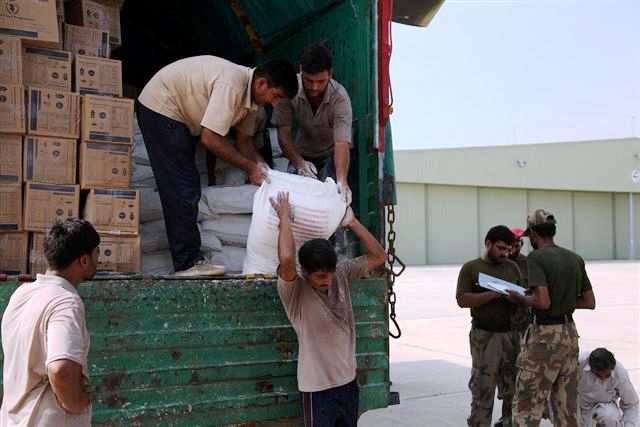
Pakistani Workers Unload Sacks of Flour from a Truck into a U.S. Army Helicopter

Pakistani workers unload sacks of flour from a truck into the back of a U.S. Army Chinook (CH-47) helicopter to be delivered as part of the disaster relief effort to help flood victims from Khyber Pakhtunkhwa Province (formerly North West Frontier Province), Pakistan, on August 5, 2010.